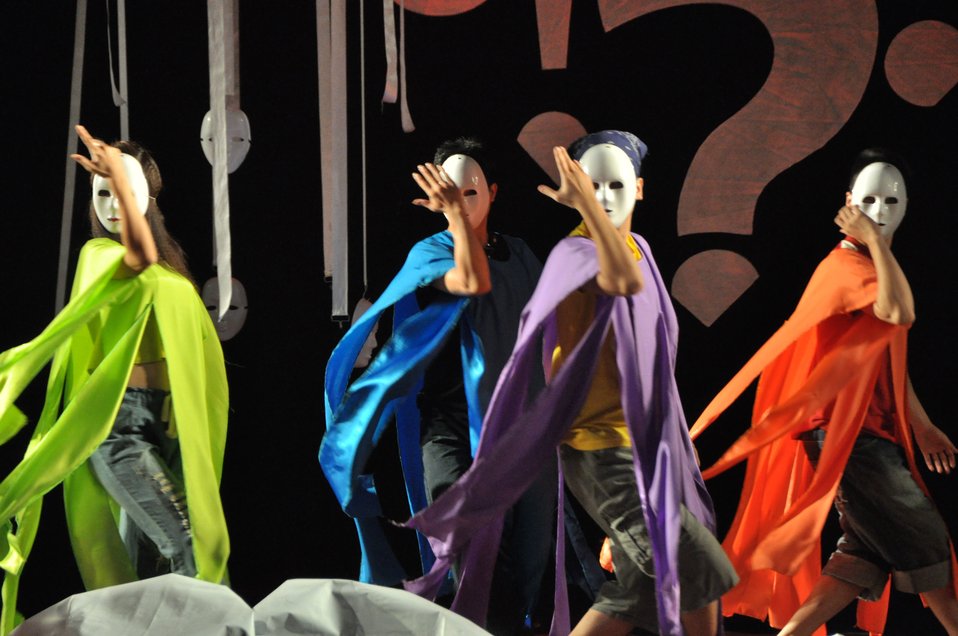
PEPFAR Musical Questions and Exclamations

Hanoi, May 17, 2013